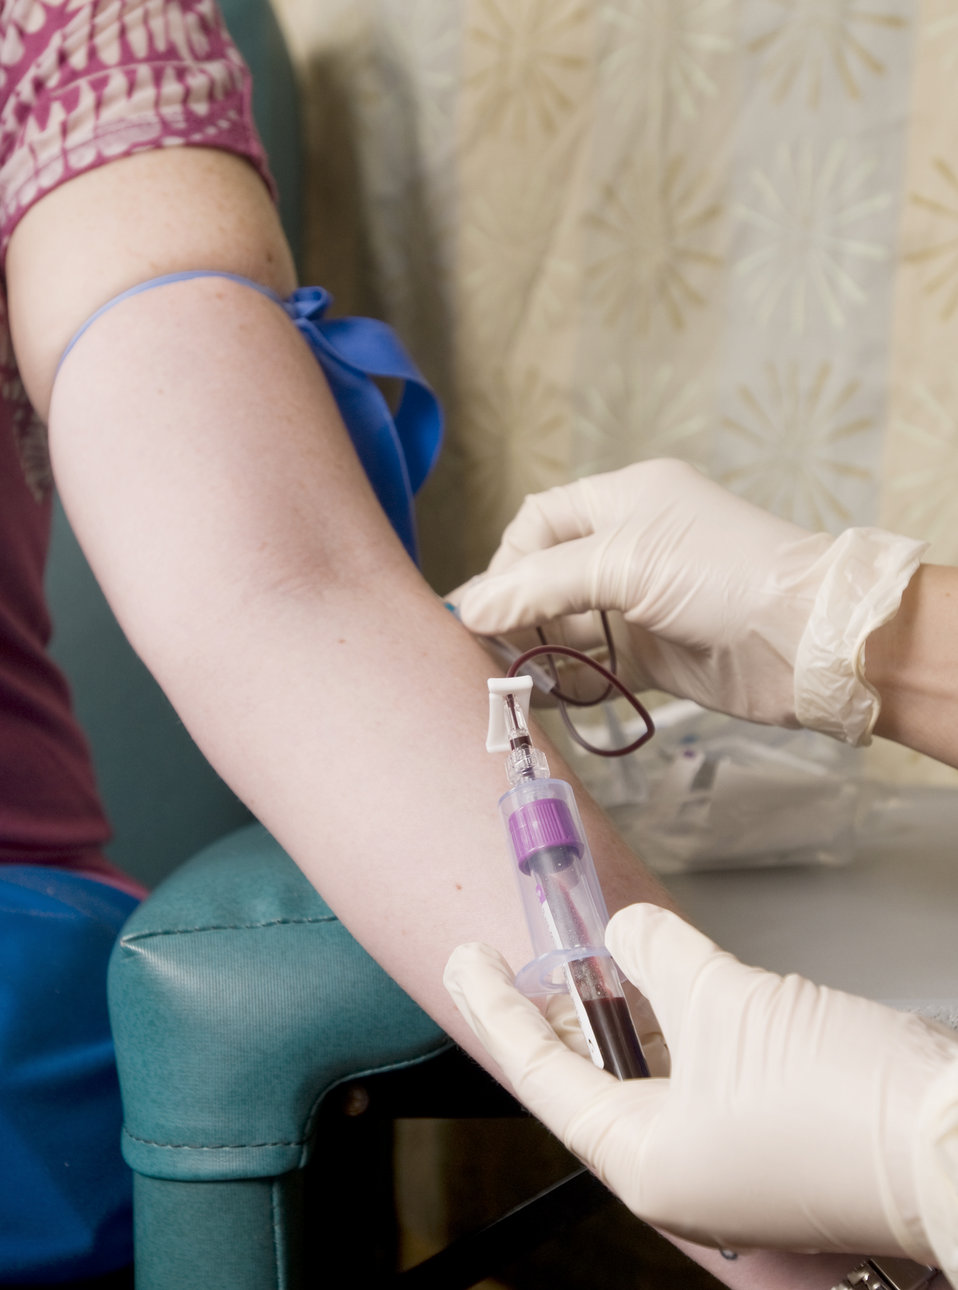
This image depicts a female patient seated in a clinic, who was in the process of having some blood extracted from her left arm's antecubital vein during a phlebotomy procedure. The gloved hands of the phlebotomist are seen securing the venipunture site: right hand holding the needle tipped catheter; right hand holding the purple-tipped blood collection vacutainer tube.